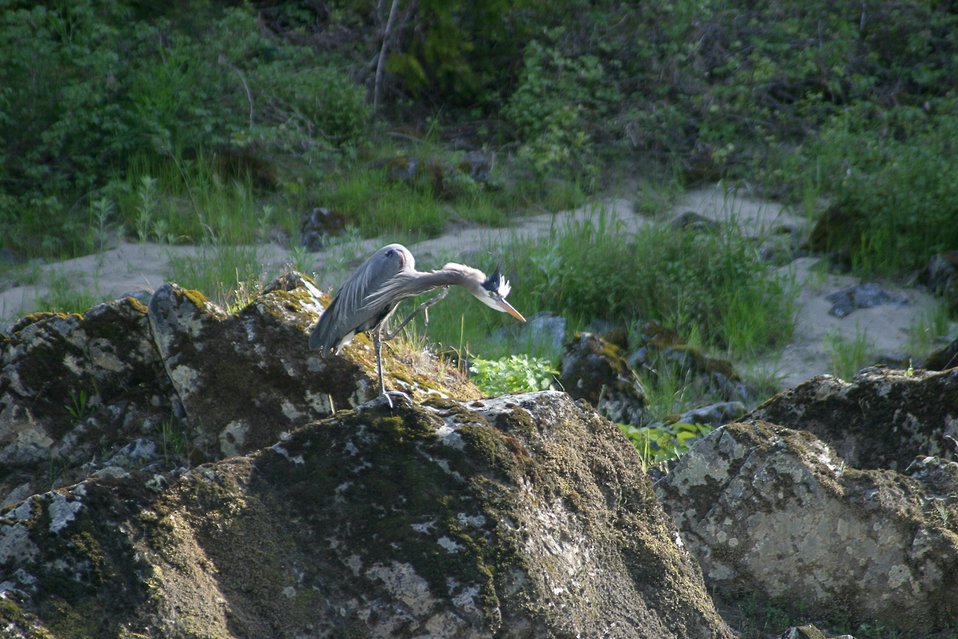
Great Blue Heron on the Wild section of the Rogue River from Grave Creek to Foster Bar. 3100 cfs at Grants Pass and 5300 at Agness.